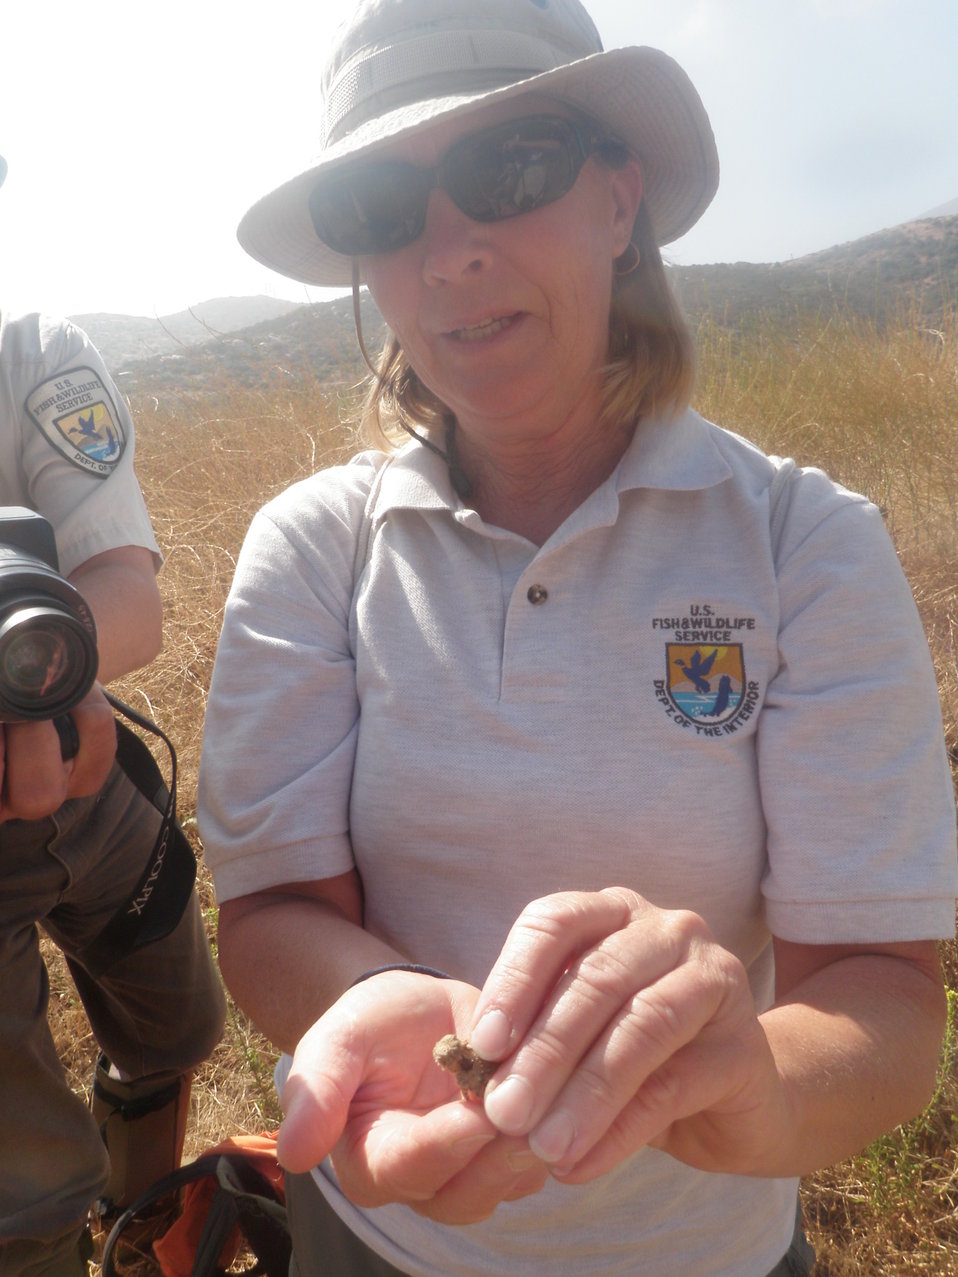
Refuge Manager Jill Terp shows a young San Diego horned lizard to other Refuge staff